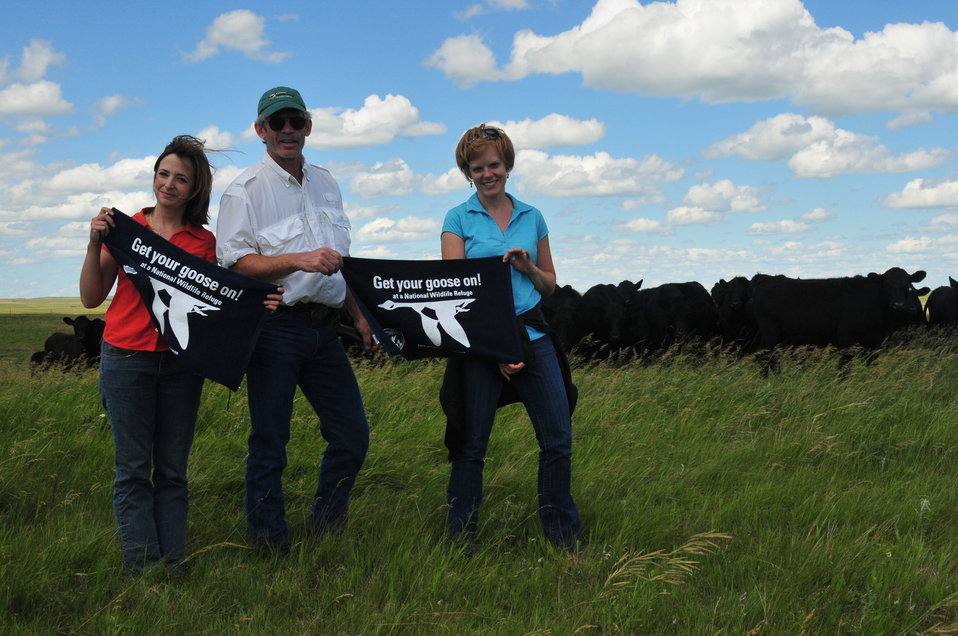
Get Your Goose On!

The national meeting for regional chiefs of the National Wildlife Refuge System is held three times a year in different locations around the country. This 2012 meeting took place in McPherson County, South Dakota, and focused on the Dakota Grassland Conservation Area.

This photo was taken on the Wade Weiszharr and Family Ranch, which contains perpetual U.S. Fish and Widlife grassland and wetland easements. This site is also located in the heart of Prairie Pothole Region, making it extremely productive migratory bird habitat and a great place to “Get your goose on!”

Marsha Pradines, Mark Chase and Serena Selboe 'get their goose on' while a herd of cattle graze the unique grasslands of the Wade Weiszharr Family Ranch behind them.